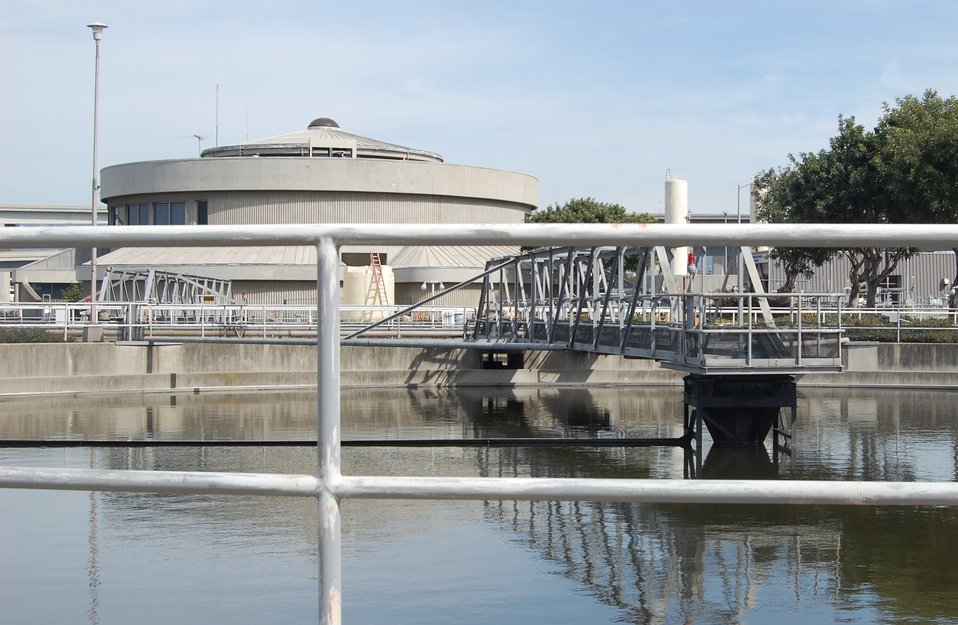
Creating Energy From Food Waste

In order to increase food waste diversion and mitigate climate change, East Bay Municipal Utility District (EBMUD) is pioneering an innovative method of reducing food waste reaching landfills while simultaneously producing renewable energy. In Oakland, California, EBMUD’s main wastewater treatment plant was the first sewage treatment facility in the nation to convert post-consumer food scraps to energy via anaerobic digestion.